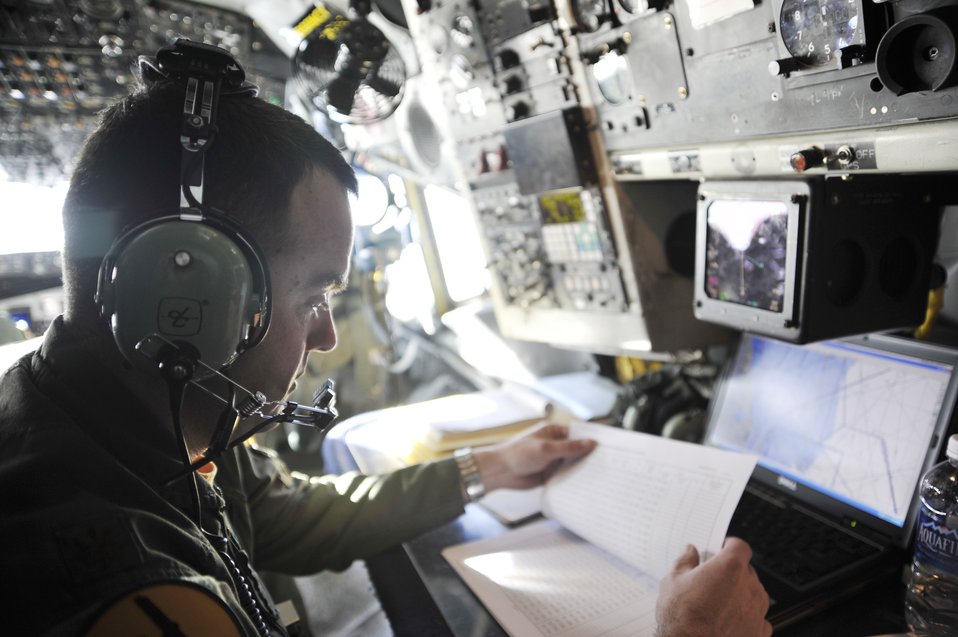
OC-135 crews assist from 15,000 feet

Maj. Michael Vanone monitors navigational equipment in an OC-135B Open Skies aircraft Jan. 16, 2010, over Haiti. Major Varone is a navigator on the OC-135 with 45th Reconnaissance Squadron at Offutt Air Force Base, Neb. Army, Navy and Air Force personnel used the capabilities of the OC-135B to photograph Haiti to get a better understanding of the devastation from the earthquake that hit the island Jan. 12.